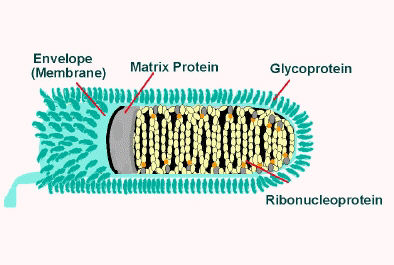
Illustration of rabies virus in longitudinal section.